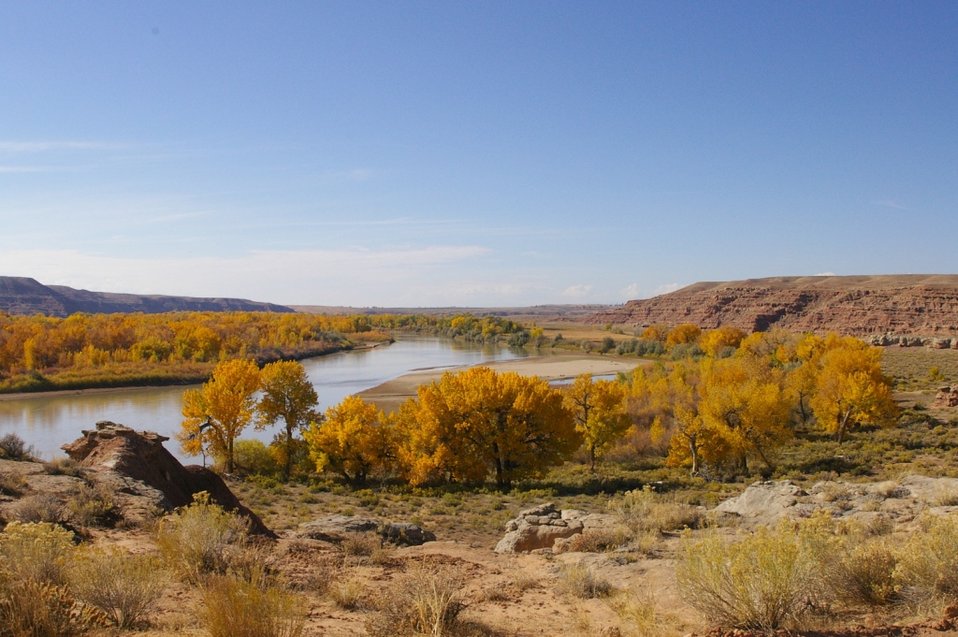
Golden Leaves of Cottonwood Trees

A fall day along the Green River over looking into Johnson bottom on Ouray National Wildlife Refuge.